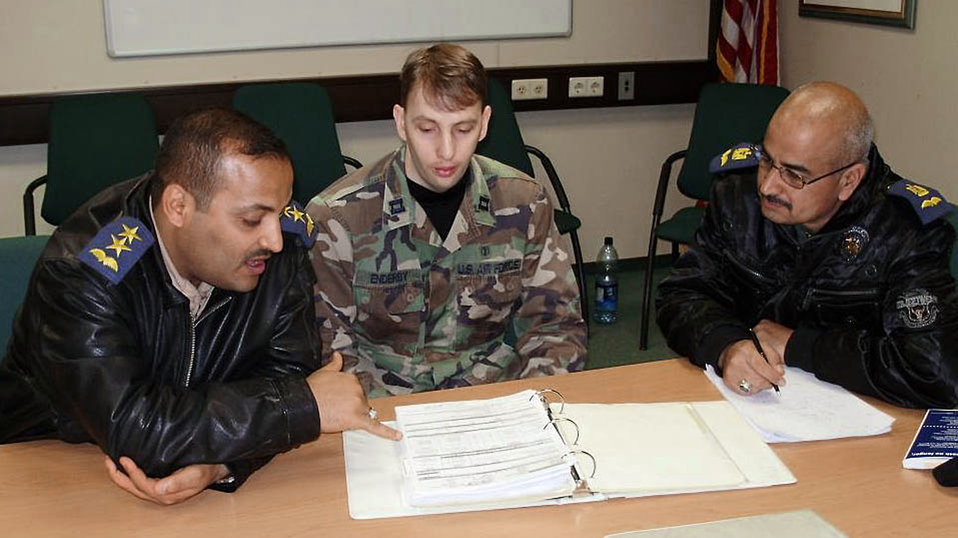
Iraqi surgeons attend annual conference in Germany

Capt. James Enderby shows the Iraqi air force flight surgeons Major (Dr.) Abdulrazzaq and Lt. (Dr.) Hazem the bioenvironmental engineering evaluations of the maintenance shops March 13 at Ramstein Air Base, Germany. Captain Enderby is assigned to the 86th Aerospace Medicine Squadron.